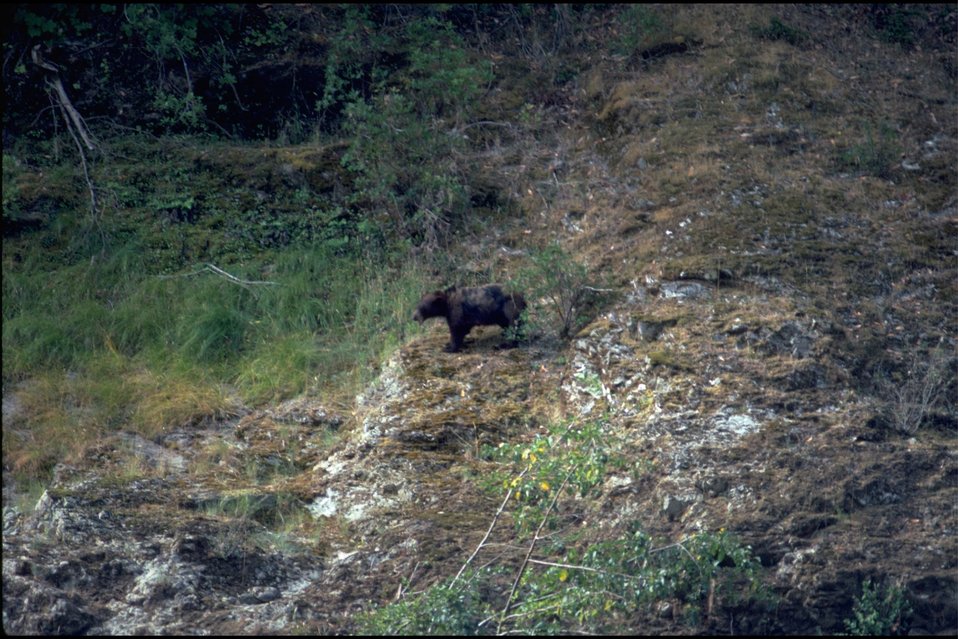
Rogue River - Black Bear.